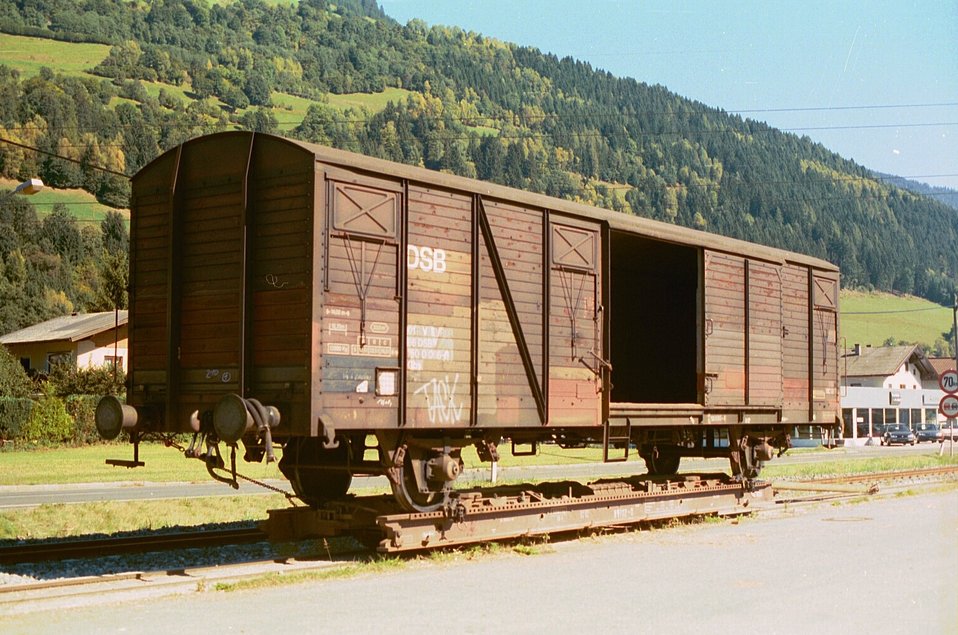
001015 gauge buster